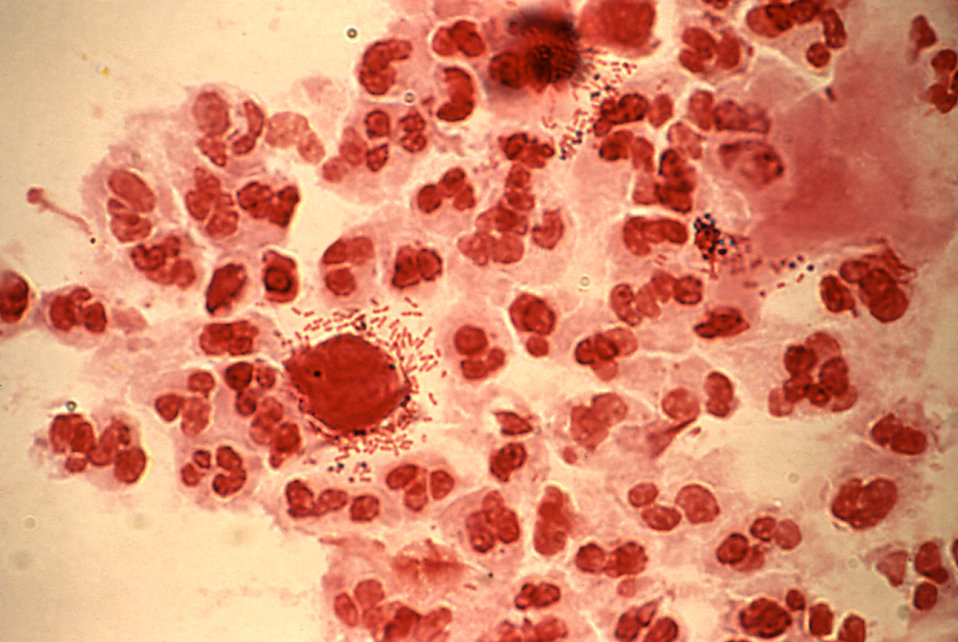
This Gram-stained micrograph of a urethral discharge revealed the presence of both trichomonads and rods.